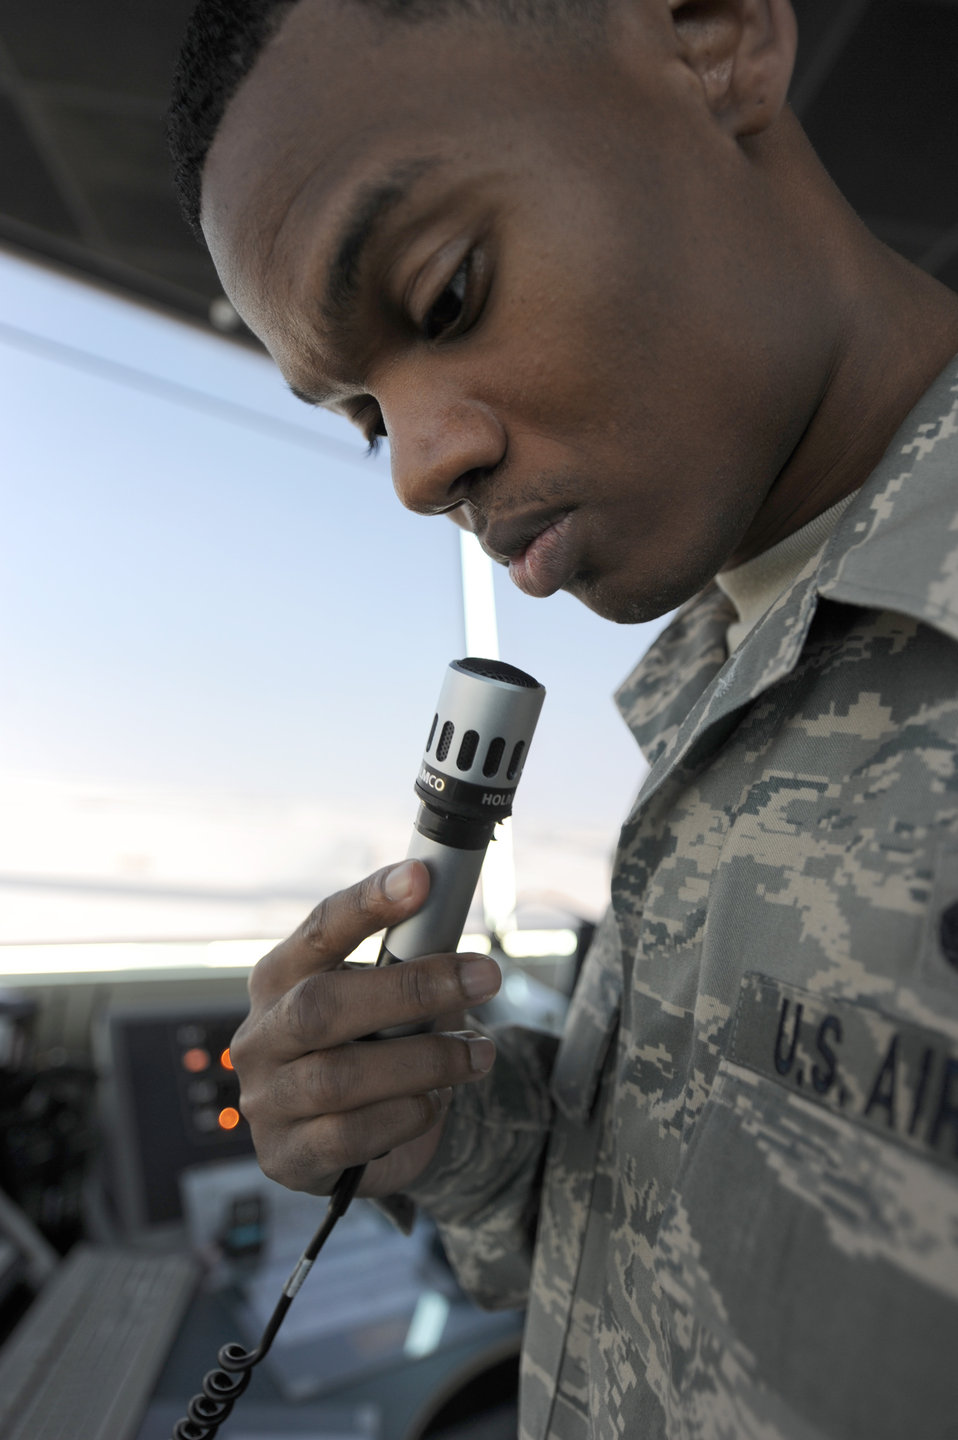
Air traffic controllers ensure safe flow of aircraft

Staff Sgt. Tyrone Edwards clears an aircraft for take off Oct. 18, 2010, at an undisclosed location in Southwest Asia. Sergeant Edwards is a local controller with the 379th Expeditionary Operations Support Squadron and is deployed from Keesler AFB, Miss.